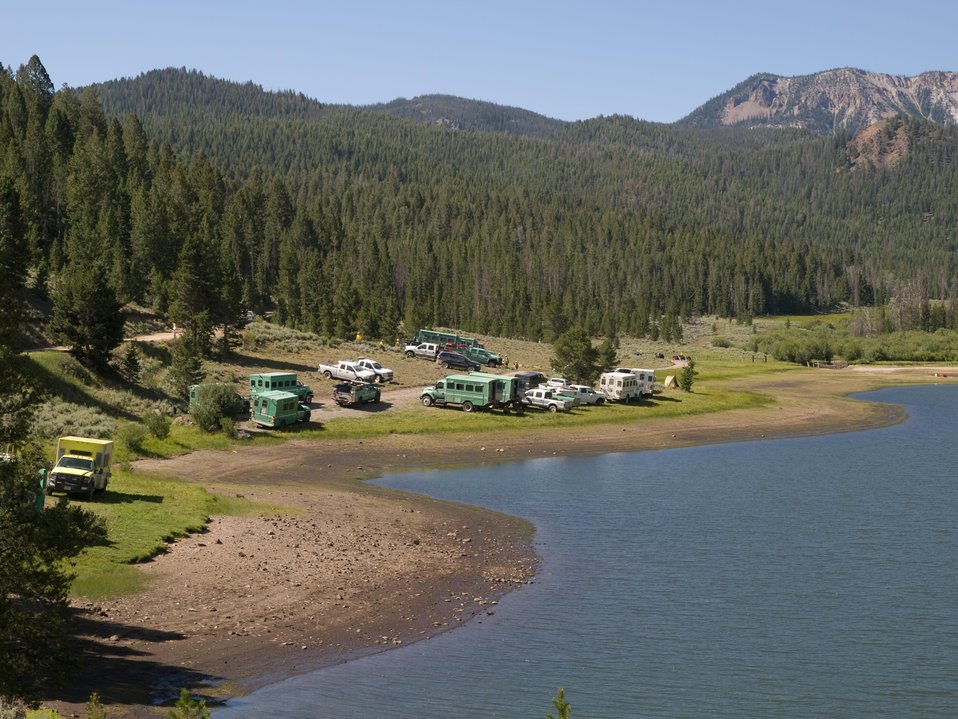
Fire crews camp at the Mosquito Flat Reservoir for the Lodgepole Fire. The Lodgepole Fire in the Salmon-Challis National Forest near Challis, ID began on Jul. 20, 2013 by lightning has consumed approximately 20,080 acres and is approximately 15% contained.